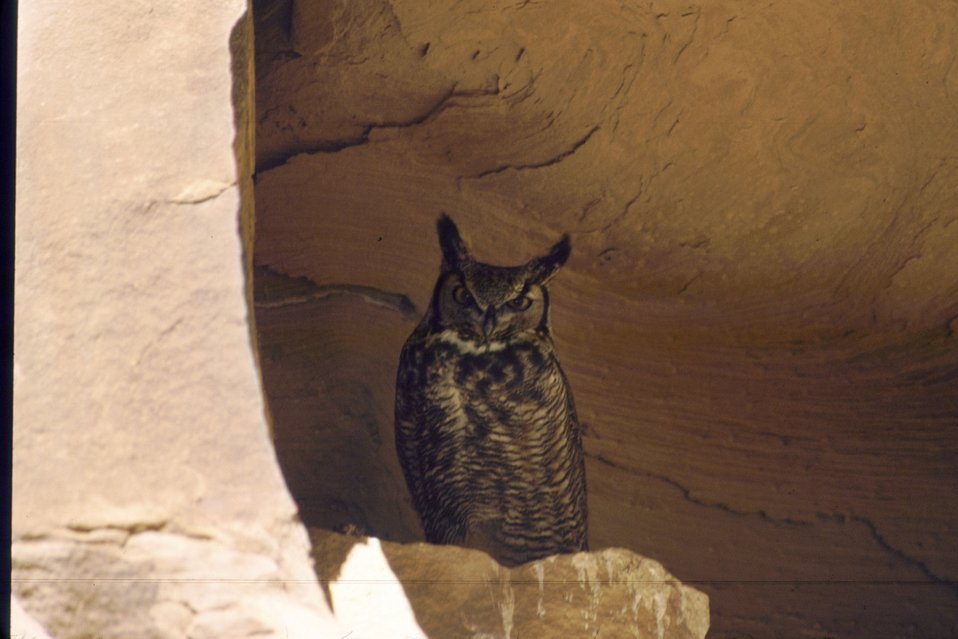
Great Horned Owl in Flume Canyon